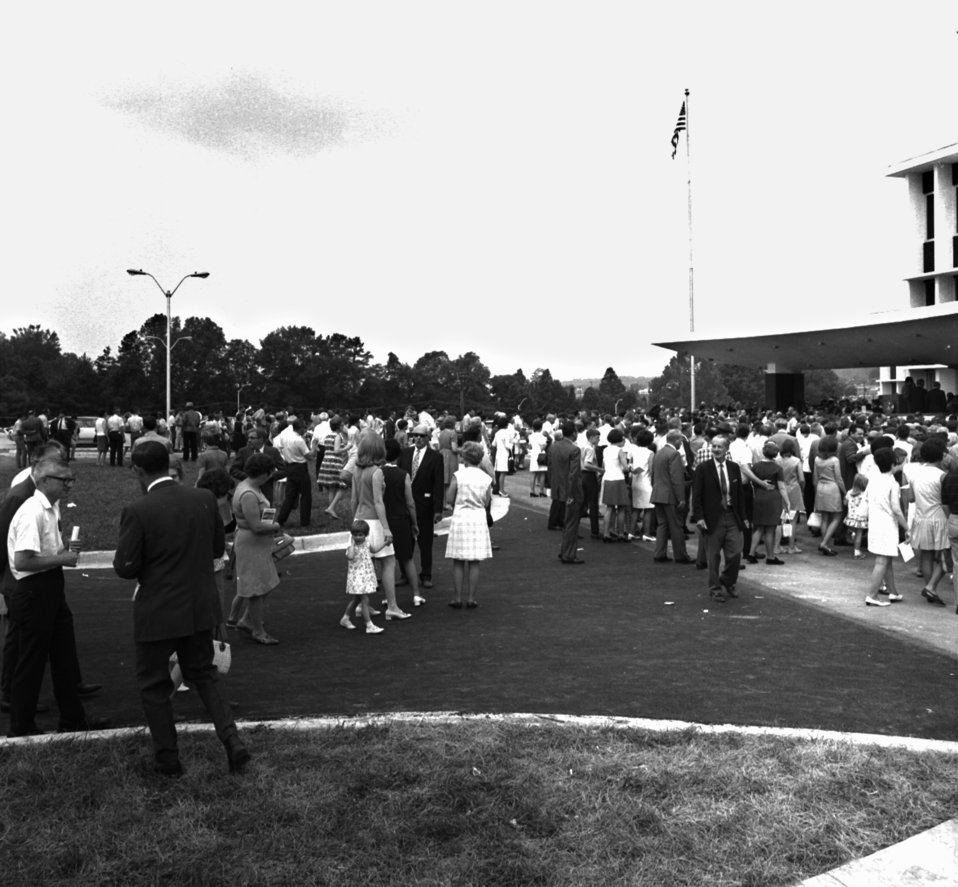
Formal Dedication New AEC (Atomic Energy Commision) - FOB (Federal Office Building) Oak Ridge

70-165m DOE Photo by Frank Hoffman Formal Dedication New AEC (Atomic Energy Commision) - FOB (Federal Office Building) Oak Ridge Tennessee 6-27-1970